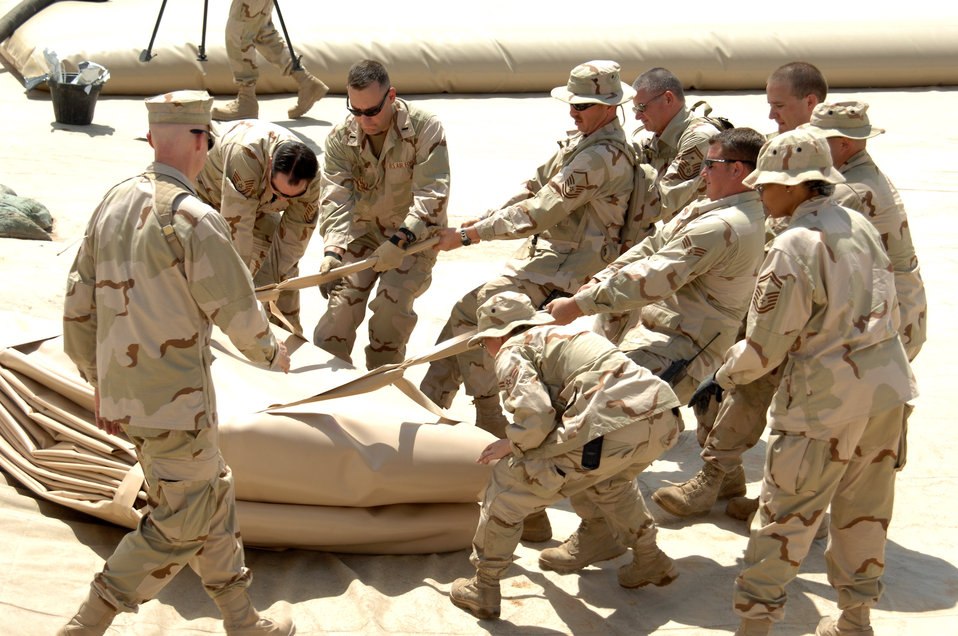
Kirkuk Airmen upgrade fuel storage

Airmen in the 506th Expeditionary Logistics Readiness Squadron pull a new fuel bladder into a fuel pit June 19 at Kirkuk Regional Air Base, Iraq. The bladder will be filled with JP-8 jet fuel. Fuel storage bladders are collapsible, flexible storage containers that provide temporary as well as long term fuel storage.